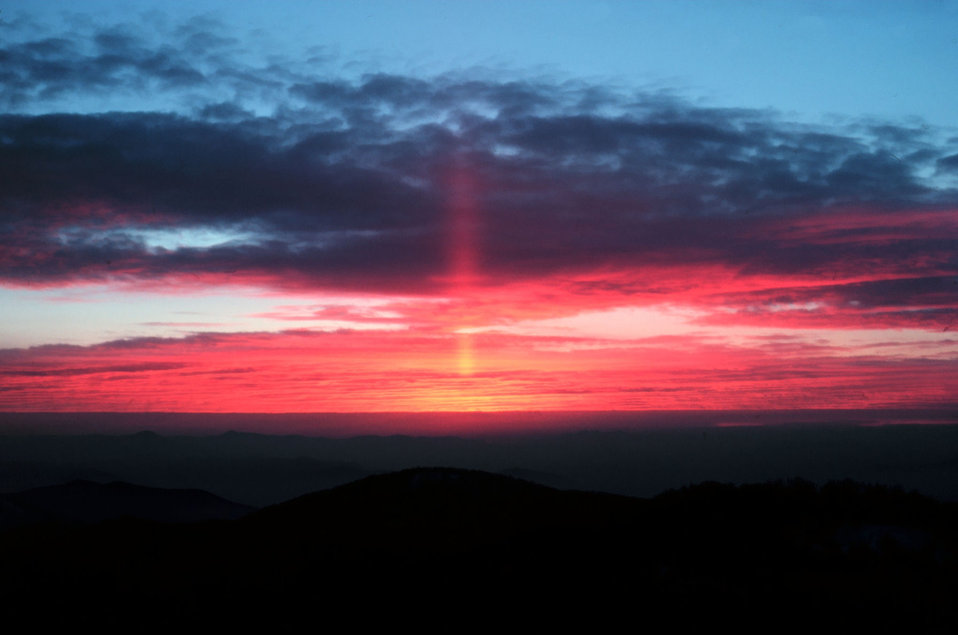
Sun pillar projected onto altocumulus